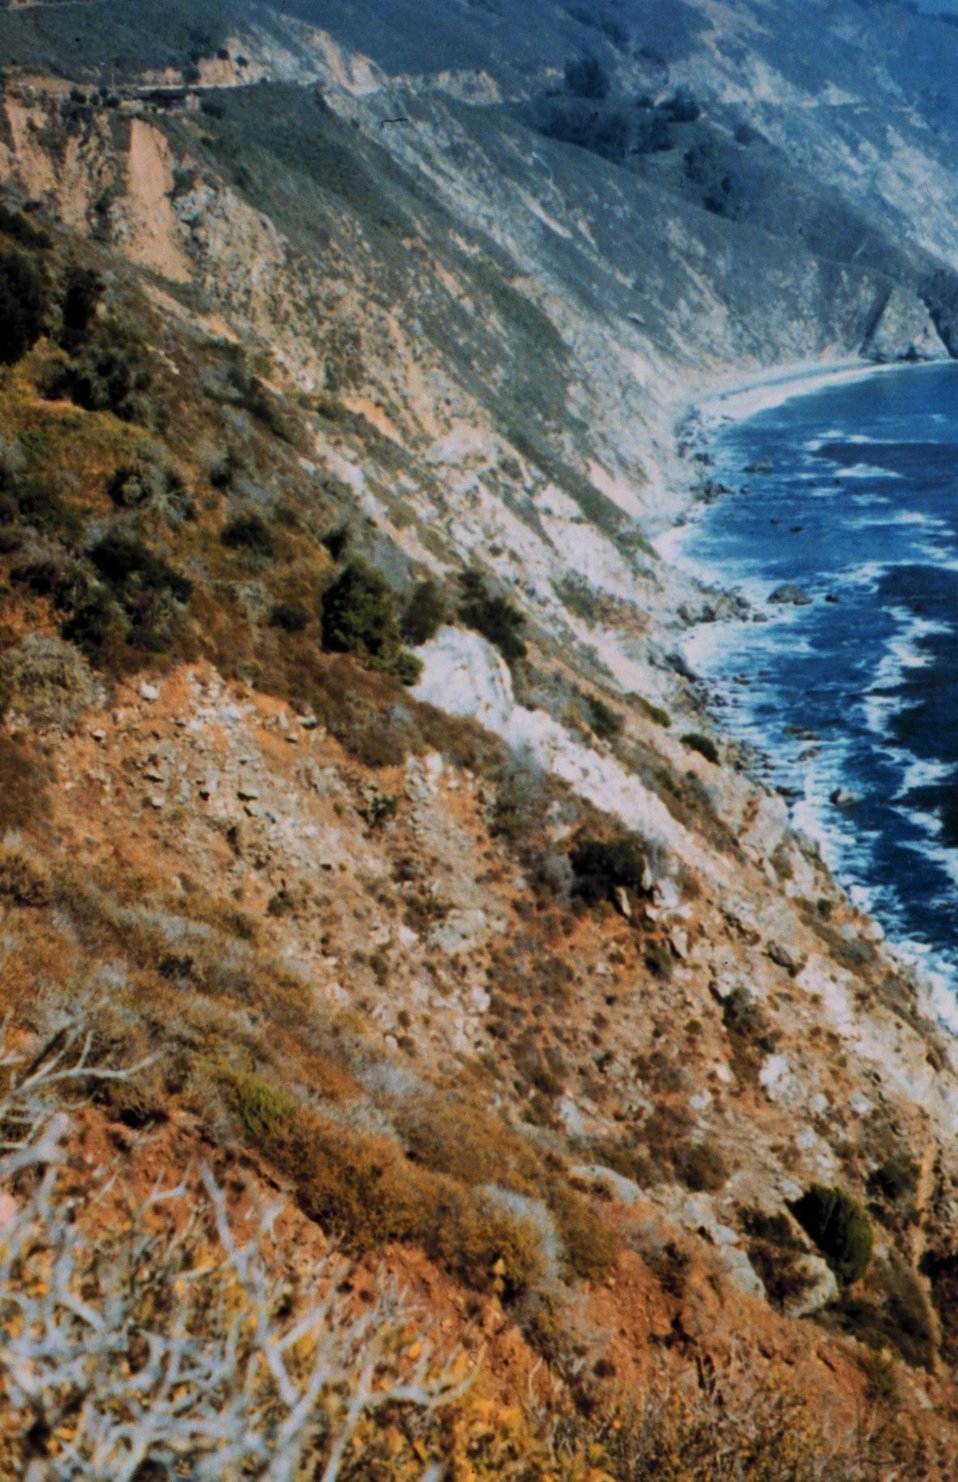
Looking over the edge from Highway 1 along the Big Sur coastline.